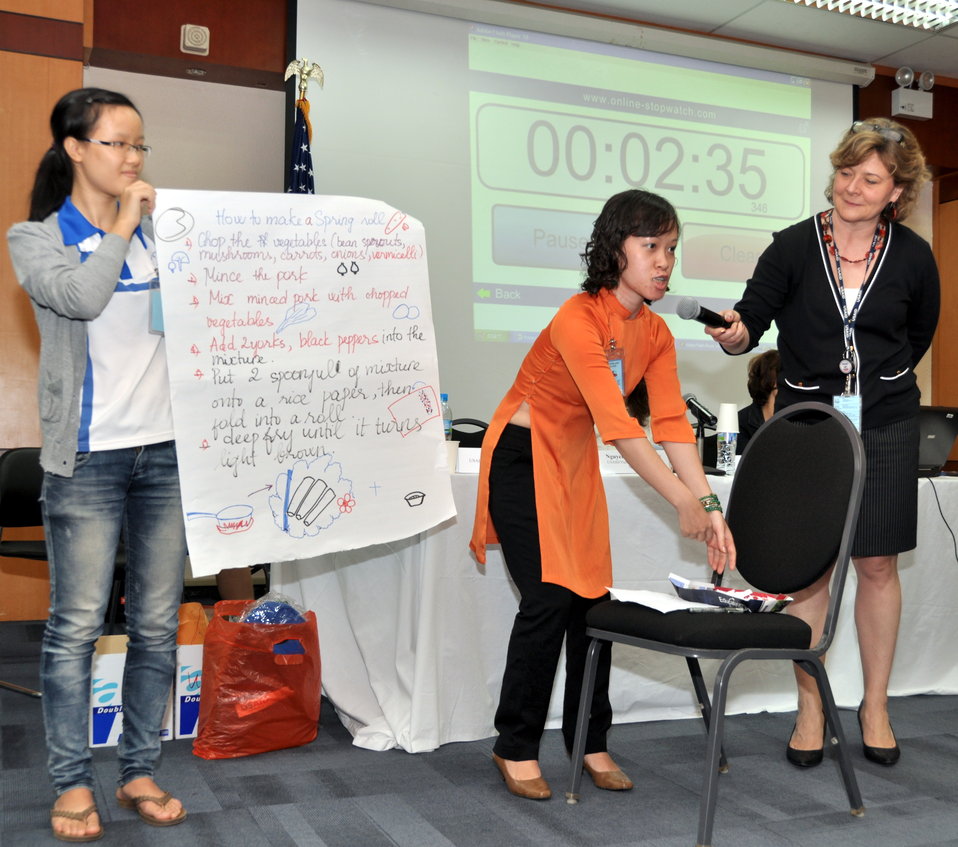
Students join the ‘USAID and Higher Education in Vietnam’ talk

Photo: @USAIDVietnam, November 19, 2012